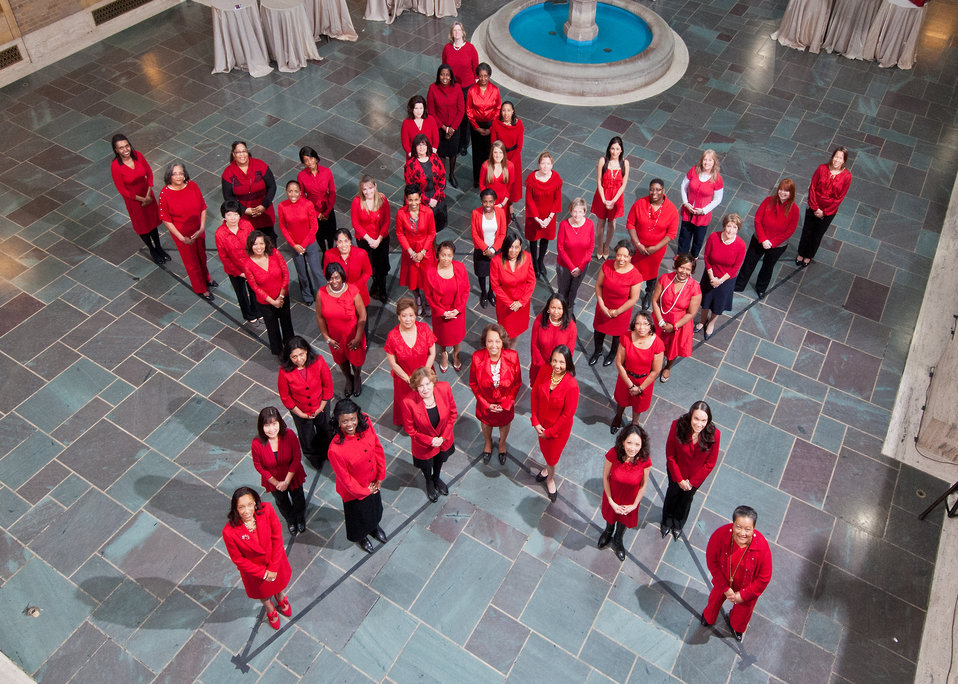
Many women wore red supporting “Women Education/Women Empowerment” at the United States Department of Agriculture Black History Month celebration “Black Women in American Culture and History” at the U.S. Department of Agriculture in Washington, D.C. on Thursday, February 16, 2012.